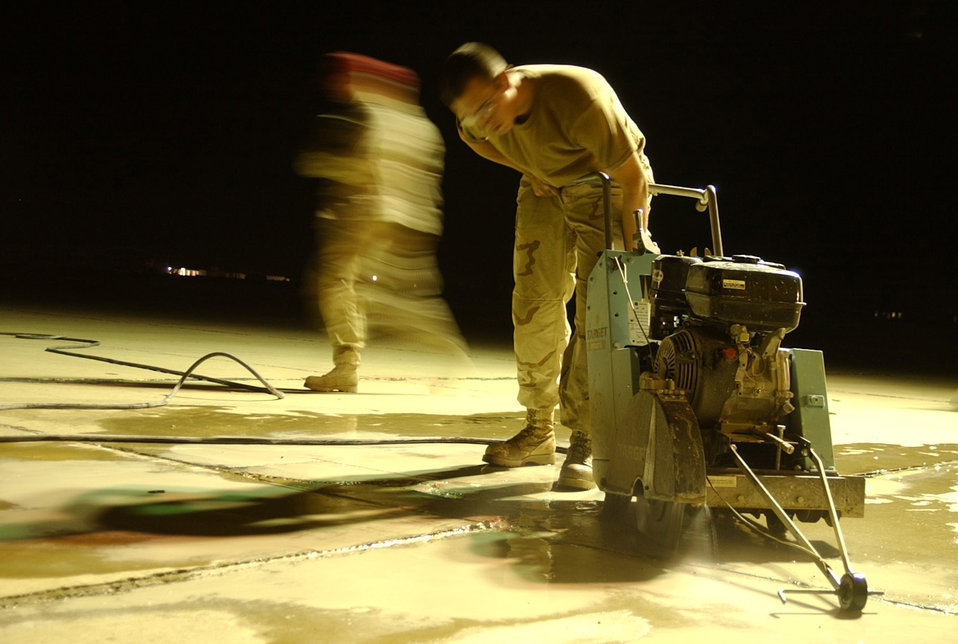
On the cutting edge

TALLIL AIR BASE, Iraq -- Senior Airman Richard Norwood of the 1st Expeditionary Red Horse Group carefully watches the edge of a concrete saw as he and members of his team begin repairs on one of two runways here. Originally built by the French, and then abandoned by the Iraqis after the Gulf War, the runways had succumb to years of neglect.